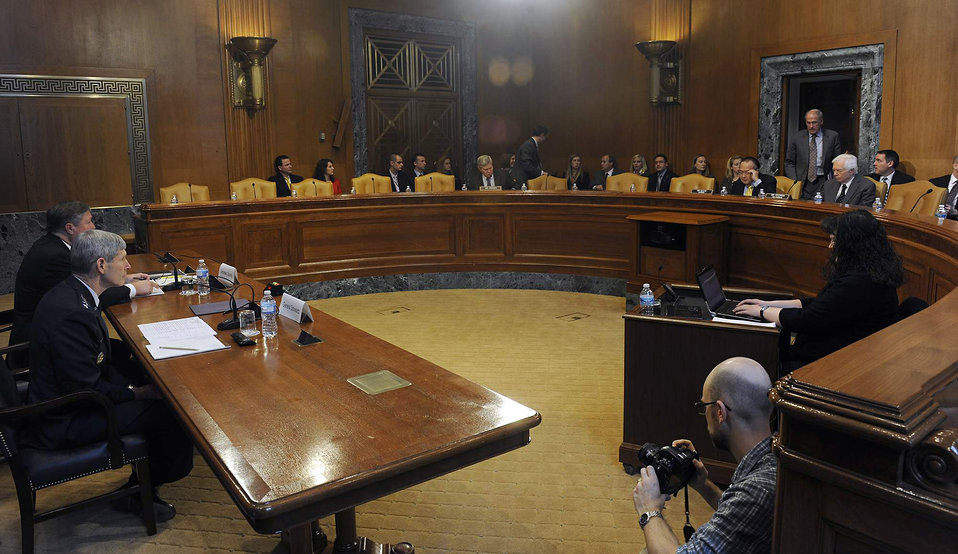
Air Force officials present budget to appropriations committees

The Senate Appropriations Committee’s Subcommittee on Defense listens to testimony on the Air Force’s fiscal 2012 budget request in Washington, D.C., March 30, 2011. Secretary of the Air Force Michael Donley and Air Force Chief of Staff Gen. Norton Schwartz both served as witnesses.